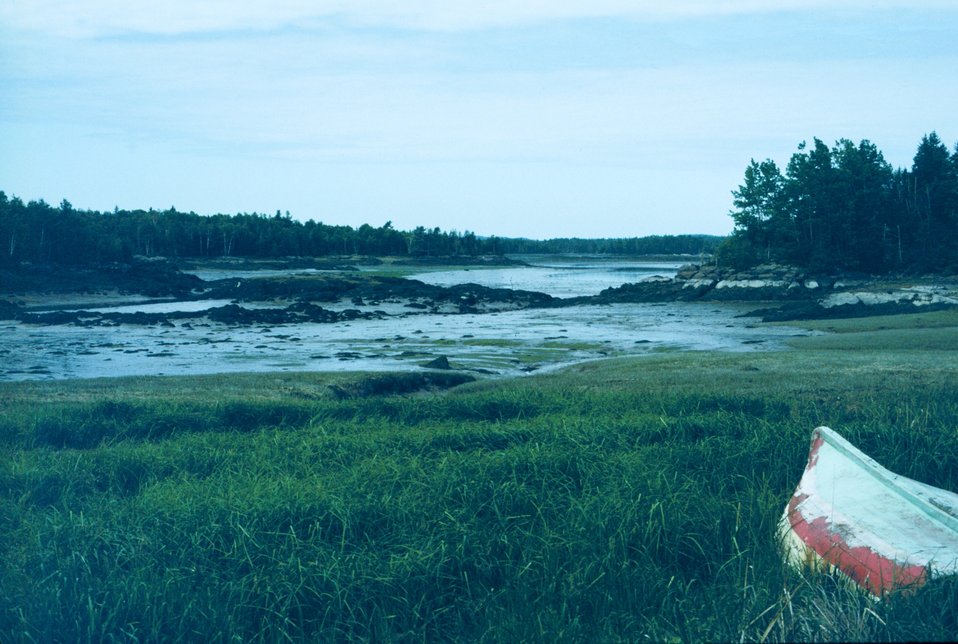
Low tide in one of many inlets in the area.